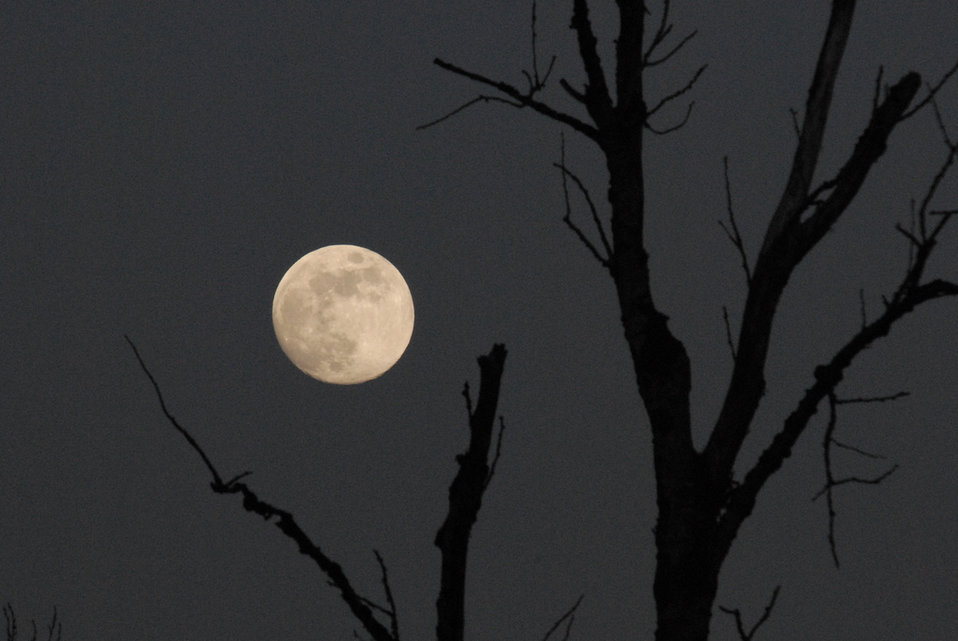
Moon over Ridgefield

Full moon over Ridgefield National Wildlife Refuge, WA. Credit: Dan Dzurizin, Creative Commons. On full-moon hikes on the refuge, participants may see bats wheeling and hear owls hooting and coyotes yipping.